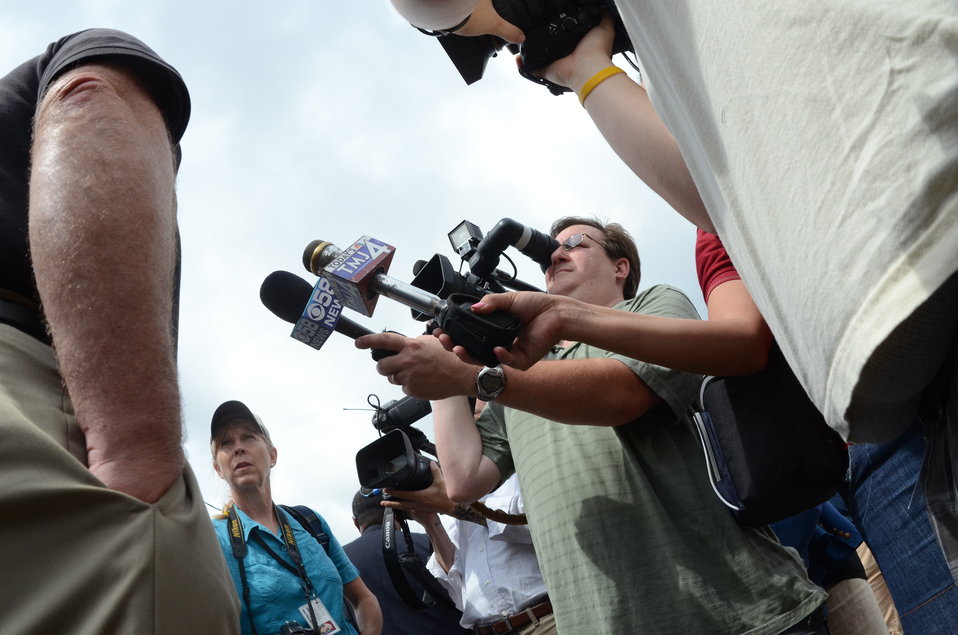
Agriculture Secretary Tom Vilsack speaking with the press at the Wisconsin State Fair in West Allis, WI, on Thursday, August 4, 2011, USDA Photo by Lance Cheung.